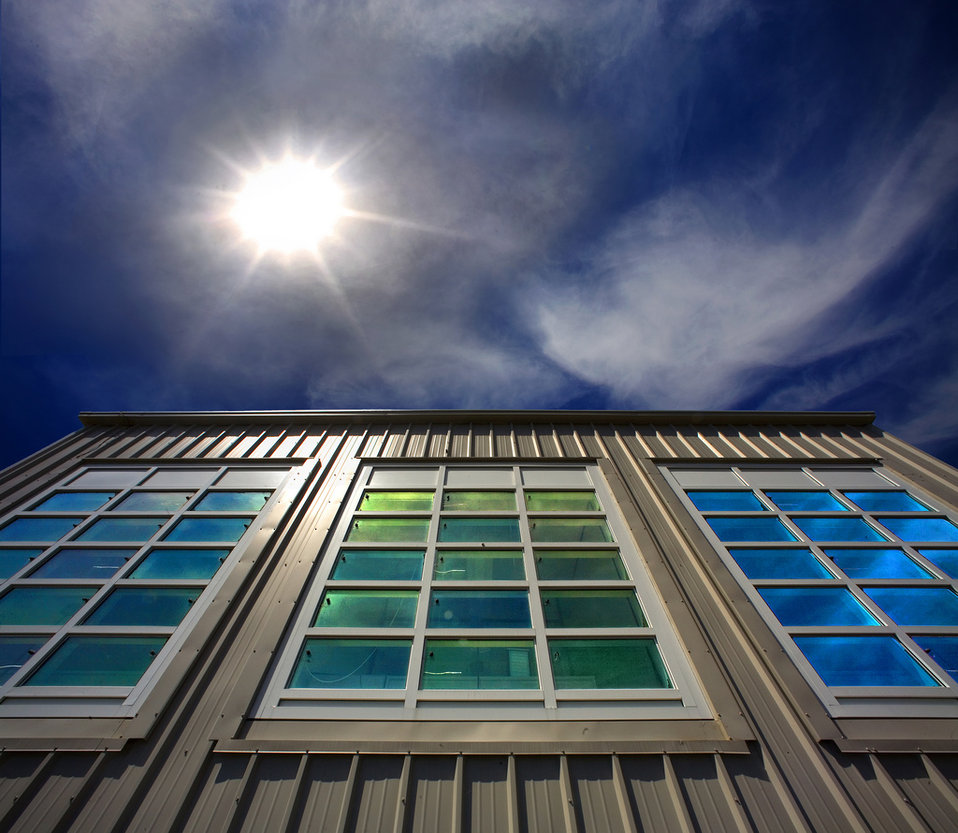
Researchers at Lawrence Berkeley National Laboratory helped develop the first energy efficient dual-paned windows, now used in buildings and homes world-wide for billions of dollars in energy savings. Current windows research in the Environment Energy Technologies Division at the lab is aimed at developing new glazing materials, windows simulation software, and other advanced high-performance window systems. The building shown here, located at LBNL, is a windows testing facility.